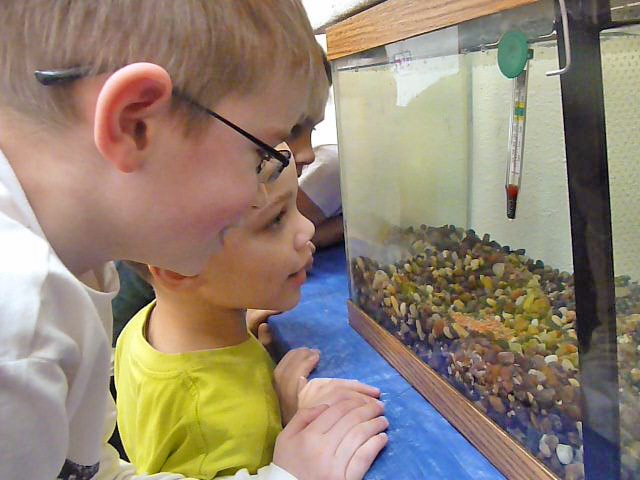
Trout Mug-a

Chapman Hill Elementary School students monitor the development of rainbow trout eggs they’re raising in their classroom as part of an international fish education project in Salem, OR on Feb. 8, 2013.